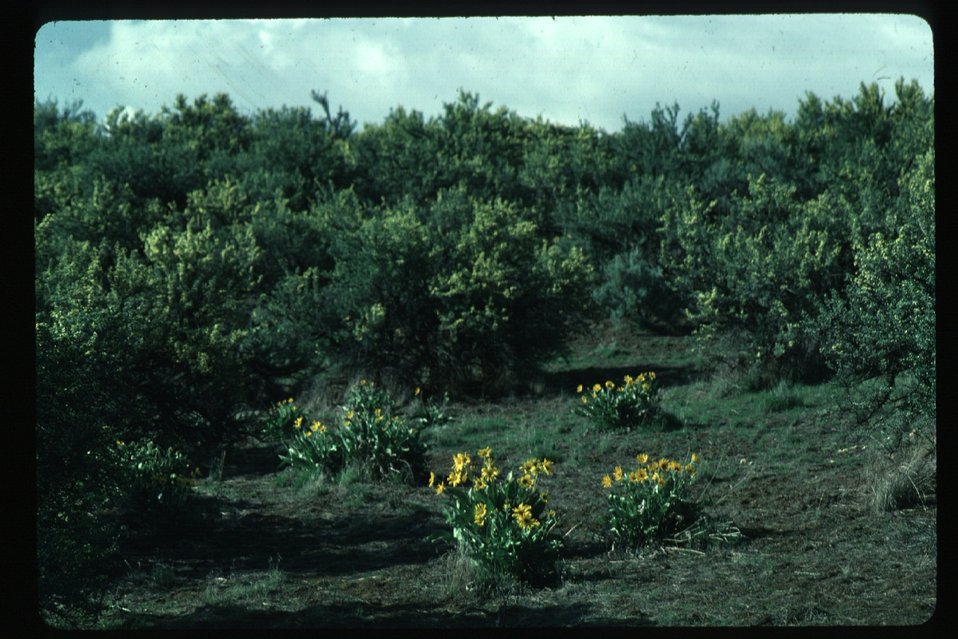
Rangleland Boise Front vegetation Arrowleaf Balsom root in Military Reserve Four Rivers Field Office LSRD Lower Snake River District